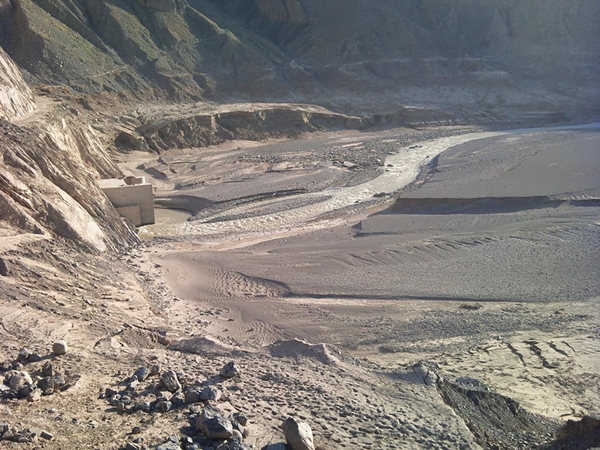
Gomal Zam 1